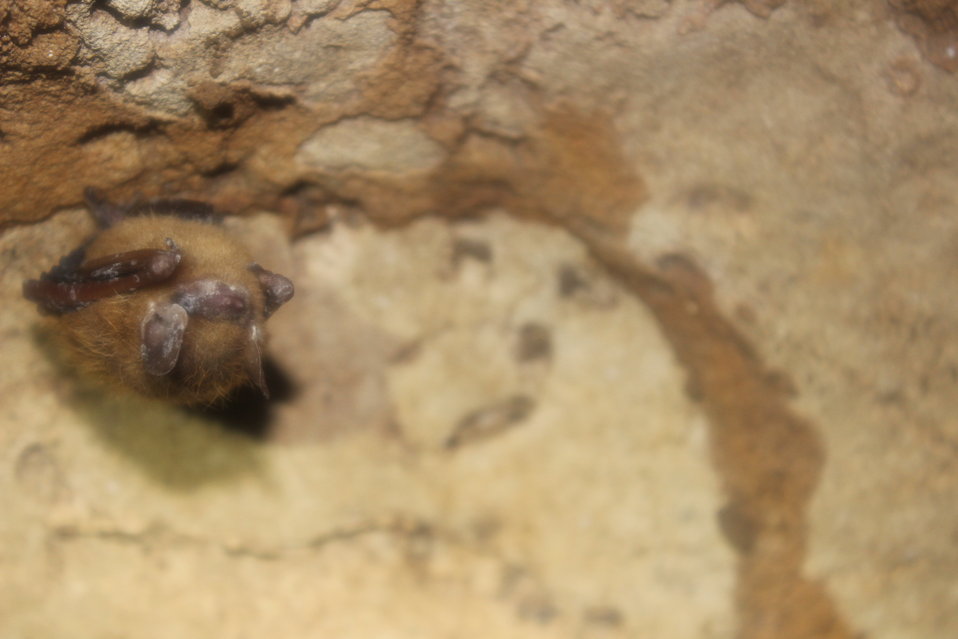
Tri-colored bat with visible WNS symptom